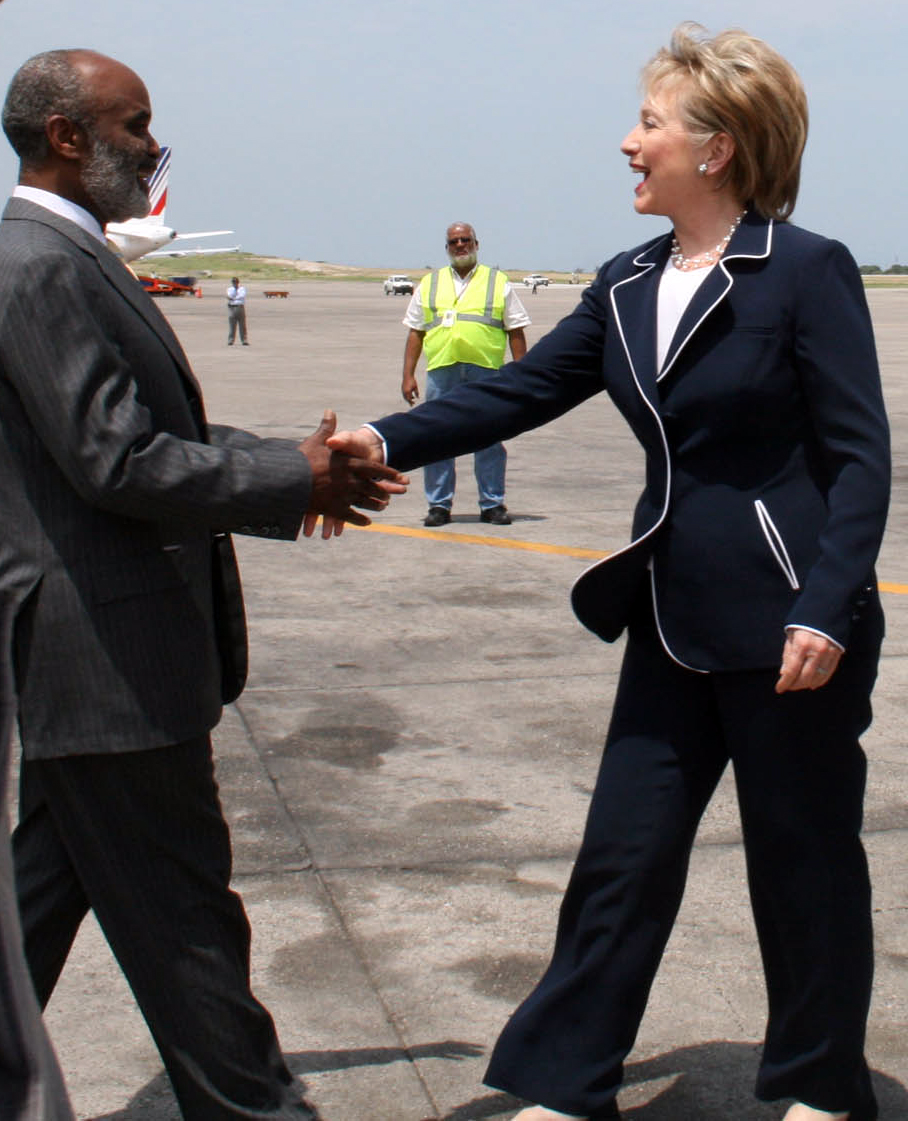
Secretary Clinton Arrives in Haiti

Haitian President Rene Preval greets U.S. Secretary of State Hillary Rodham Clinton at the Toussaint Louverture International Airport in Port-au-Prince, Haiti, April 16, 2009.